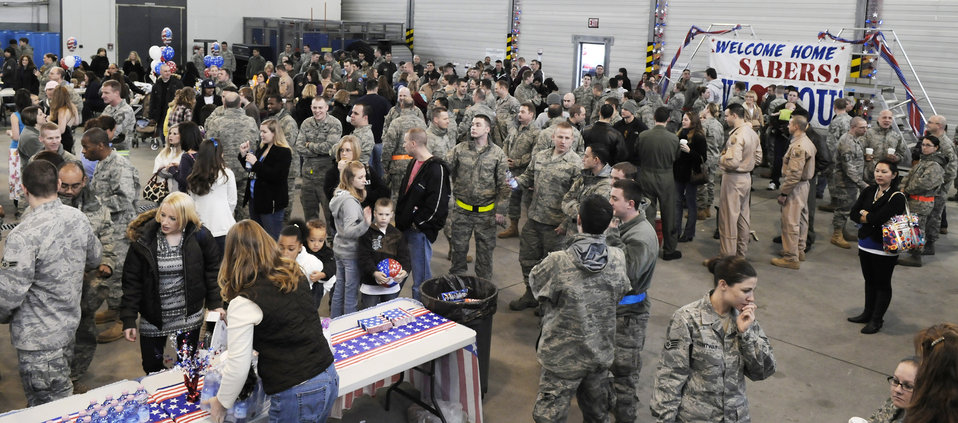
Spangdahlem team returns home

A hangar full of family and friends await the arrival of returning Airmen Feb. 5, 2010, from Joint Base Balad, Iraq. The deployment in support of Operation Iraqi Freedom supported 1,600 sorties and logged 6,300 flight hours.